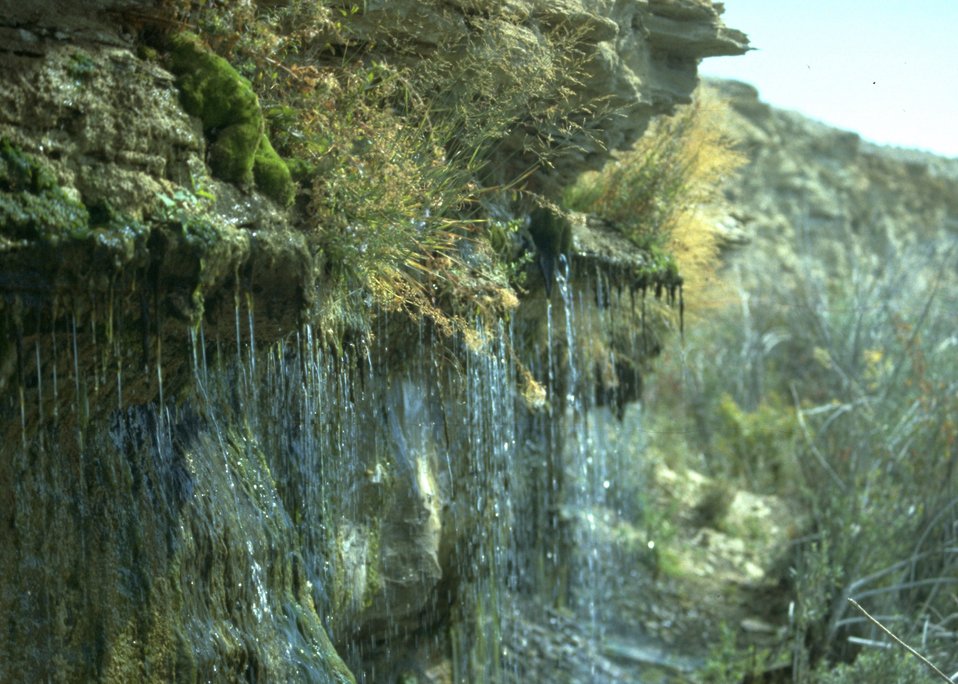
Scenic view of waterfall.